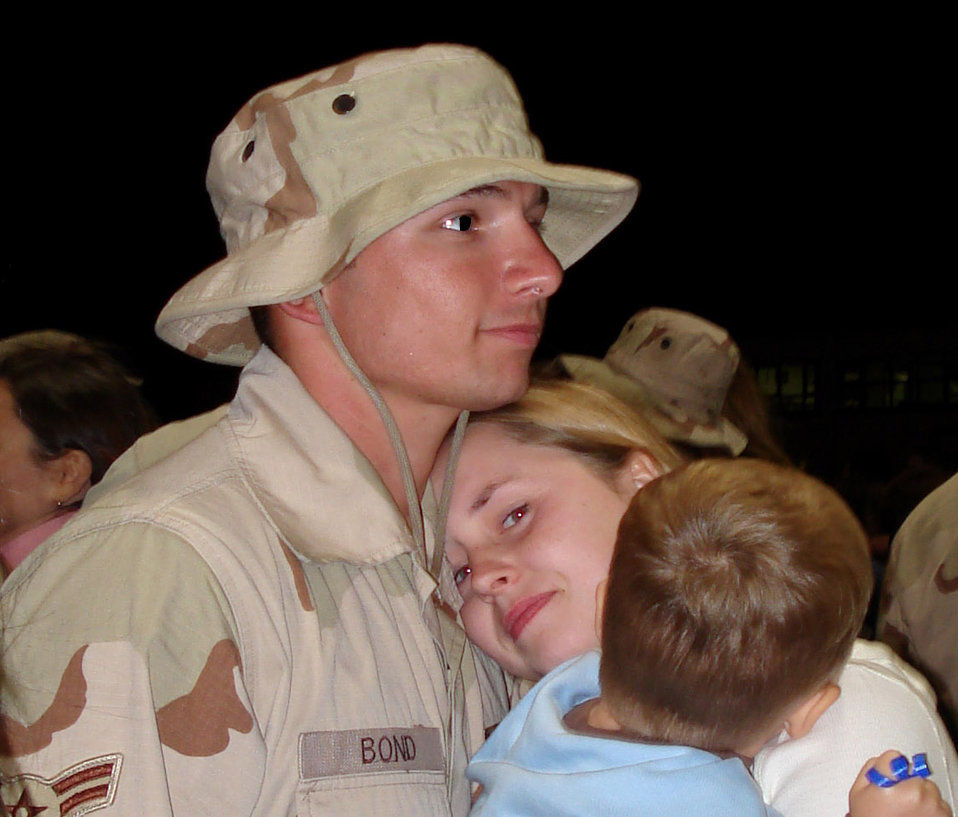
Spangdahlem Airmen return home

Senior Airman Cody Bond greets his wife, Kristy, and son, Caleb, upon his return to Spangdahlem Air Base, Germany, Sept. 9 from a deployment to Southwest Asia. He is assigned to the 52nd Aircraft Maintenance Squadron.